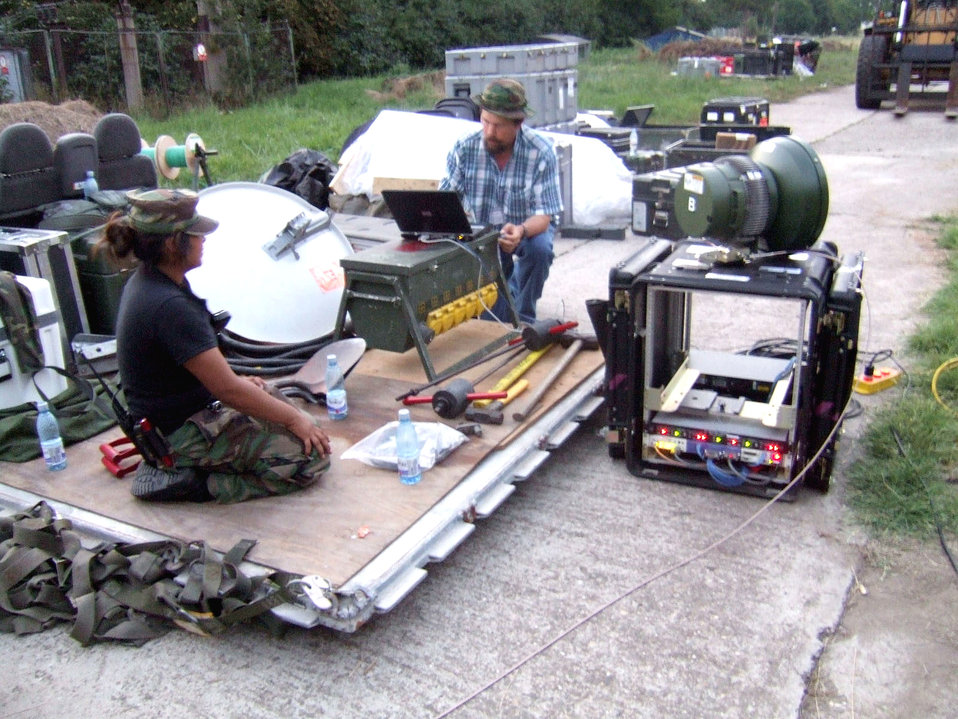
Comm team keeps Viper Lance participants connected

Senior Airman Mariana Mijangos and Timothy Weber check over their equipment before starting to set up communications at Mihail Kogalniceanu Air Base, Romania, Aug. 6 to support Exercise Viper Lance 2006. Airman Mijangos is radio maintenance technician with the 1st Combat Communication Squadron, and Mr. Weber is the 1st CBCS Air Force Engineering and Technical Services advisor.